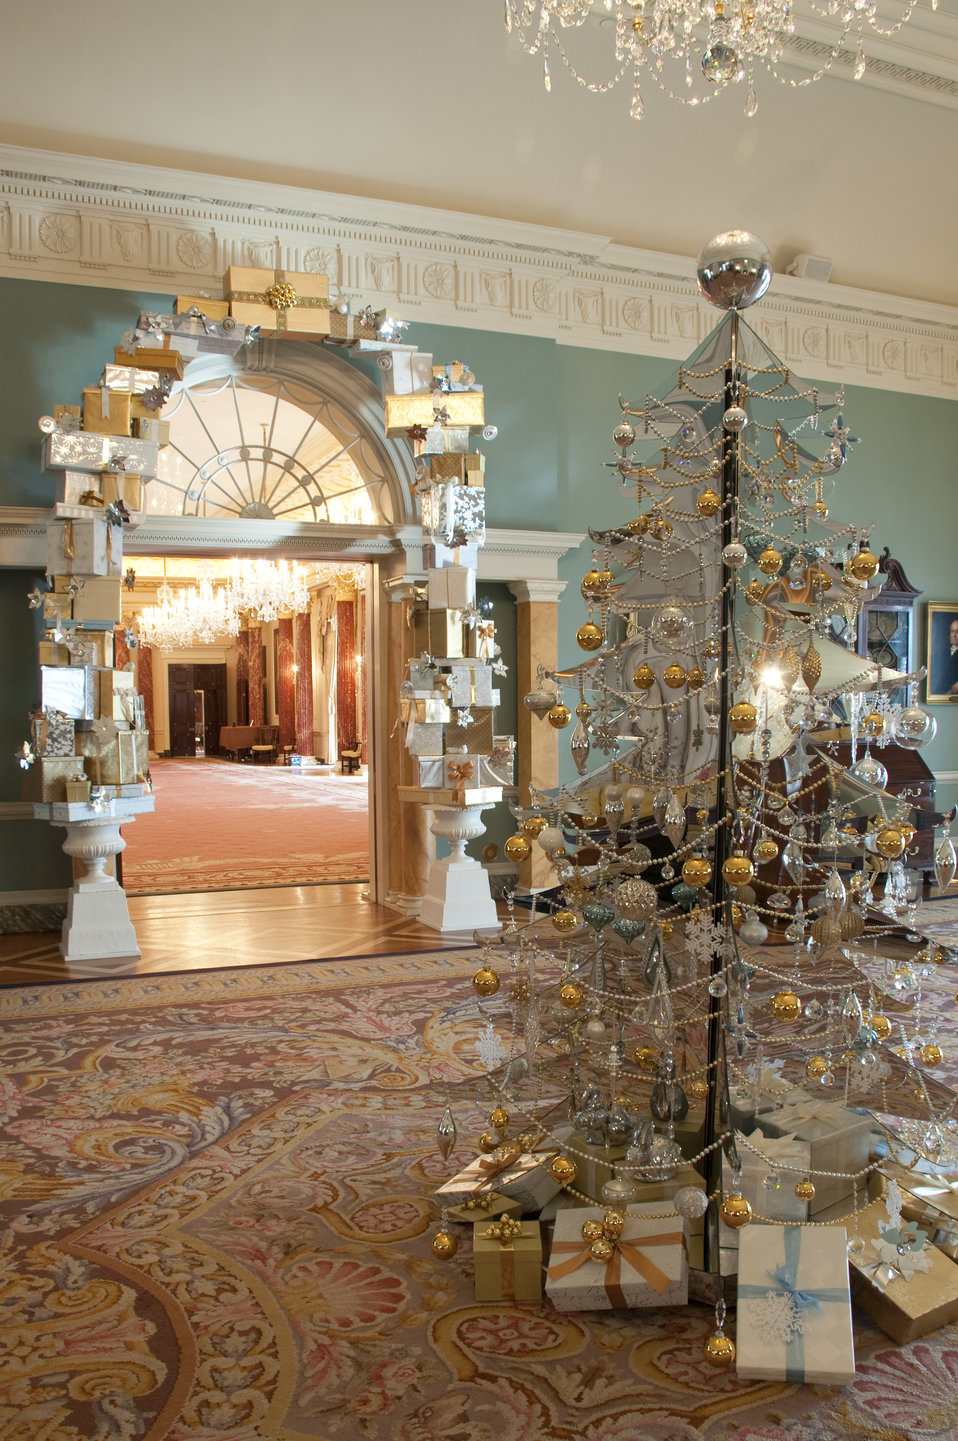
The U.S. Department of State Partners With Time Inc. and InStyle To Decorate the Thomas Jefferson State Reception Room

The U.S. Department of State partners with Time Inc. and InStyle to decorate the Diplomatic Reception Rooms for the Holidays in December 2010. Pictured in this photo is the Thomas Jefferson State Reception Room.